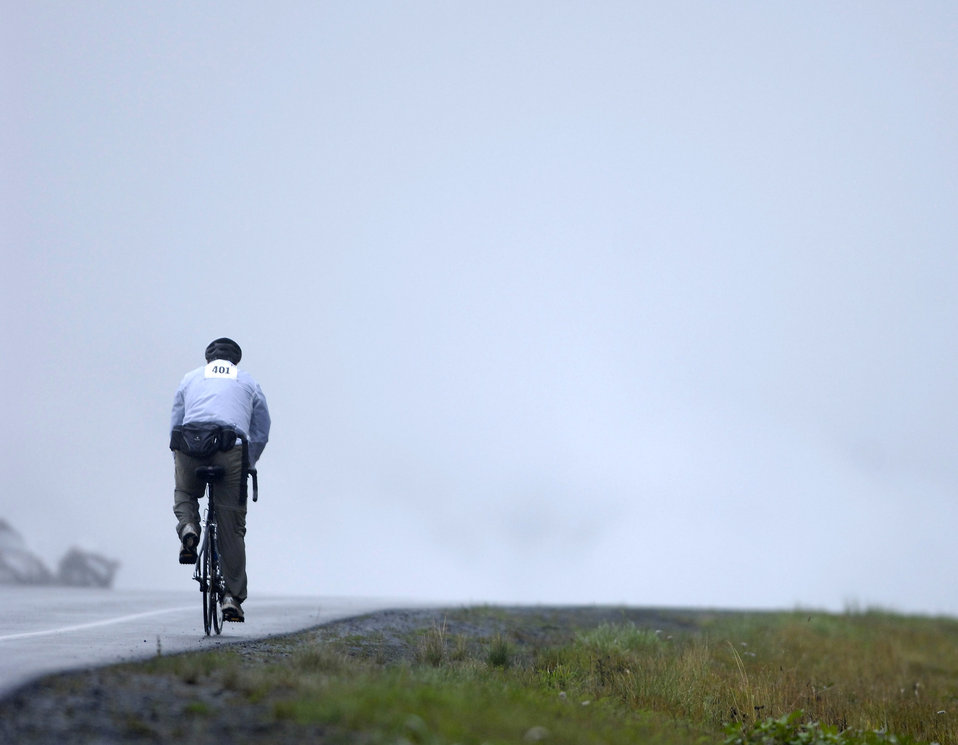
Arctic Warriors join battle against MS

Senior Master Sgt. Don Hendricks participates in the Alaska Multiple Sclerosis Bike Ride Sept. 8 along a section of the Seward Highway in the Kenai Peninsula, Alaska. Consistent and sometimes heavy rains didn't prevent Sergeant Hendricks, a member of the 3rd Component Maintenance Squadron, and other Airmen from Elmendorf Air Force Base, Alaska, from completing the ride, which took place along the Seward Highway from Mile Post 63 to Seward, Alaska. People who took the 126-mile, round-trip ride saw extreme elevation gains challenging even the most experienced of the 200 riders. All proceeds from this event went to the National Multiple Sclerosis Society.